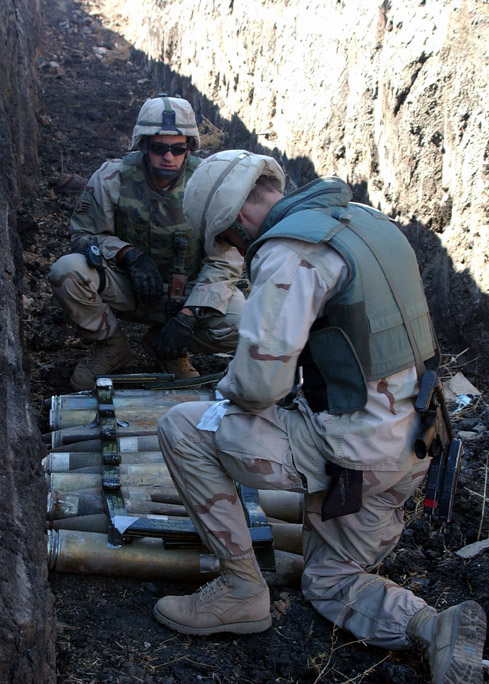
Fire in the hole

KIRKUK AIR BASE, Iraq -- Staff Sgt. Lonny Ellison (left) and Latvian First Sgt. Renars Vandinskis tape down C-4 plastic explosives that will detonate unexploded ordnance. EOD technicians destroyed 12 Iraqi 107 mm rockets found in downtown Kirkuk on Nov. 4. Such rockets have recently been fired toward military installations in the area. Six Latvian servicemembers are integrated into the 506th Air Expeditionary Group EOD team to form a coalition force tasked with locating and destroying unexploded ordnance. Since July, the team has destroyed more than 3 million pounds of Iraqi ordnance. Vandinskis and Ellison are both EOD technicians with the 506th Civil Engineer Squadron.